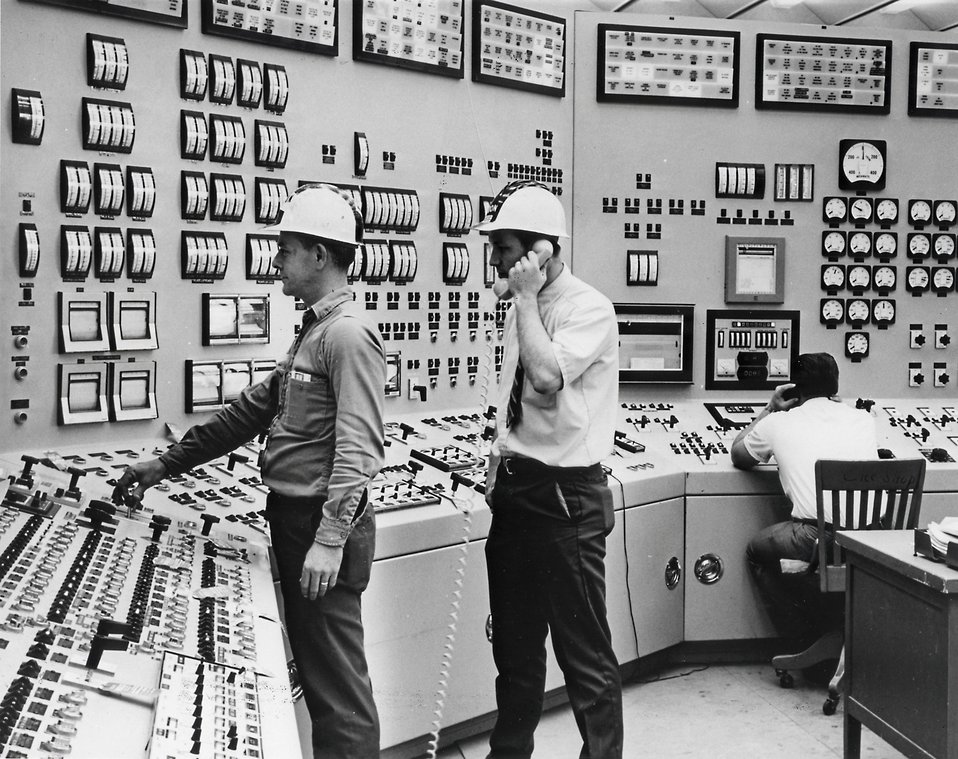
Control room of the Robert Emmett Ginna Nuclear Power Plant on the south shore of Lake Ontario at Ontario, New York. The 420,000 kilowatt plant, owned by the Rochester Gas and Electric Company, began operation in 1969. Circa 1976.